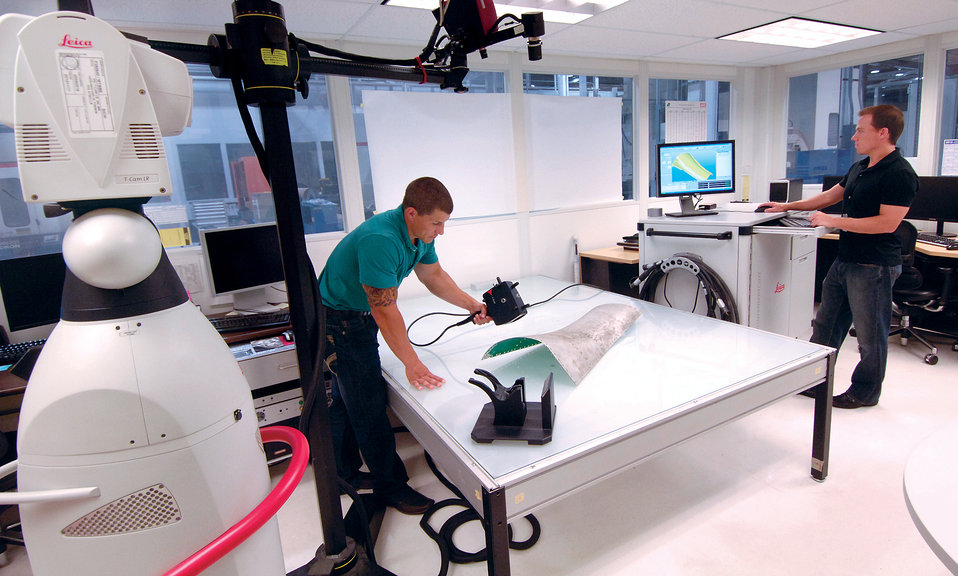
Tinker AFB Reverse Engineering

Mechanical engineers Jason Mann, left, and Nathan Pitcovich demonstrate the sophisticated Leica laser scanner system at Tinker Air Force Base, Okla. The laser will aid the 76th Commodities Maintenance Group team in reverse engineering of unavailable aircraft parts.